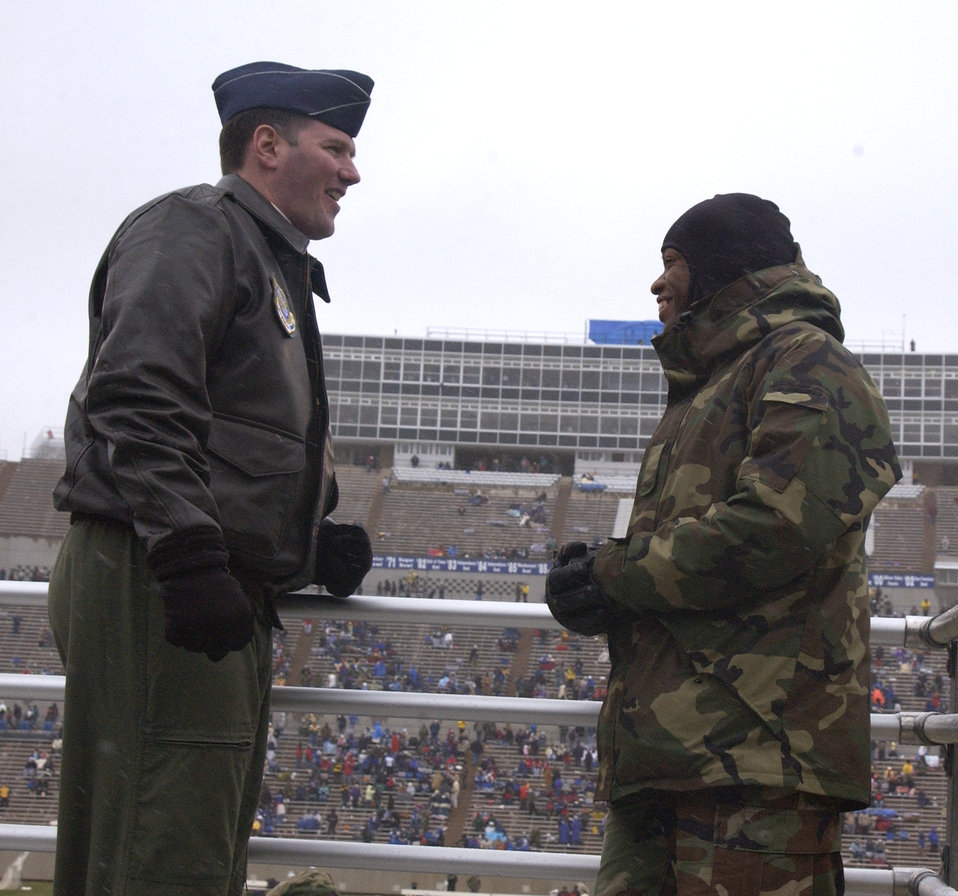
Big Brother reunites with 'little'

U.S. AIR FORCE ACADEMY -- Lt. Col. Joseph Hunt (left) and Cadet 2nd Class Xzavior Hill attend a football game here Nov.13. Colonel Hill is the inspector general for the 92nd Air Refueling Wing at Fairchild Air Force Base, Wash. Cadet Hill was paired with Colonel Hunt in the Big Brothers-Big Sisters program when he was a child.